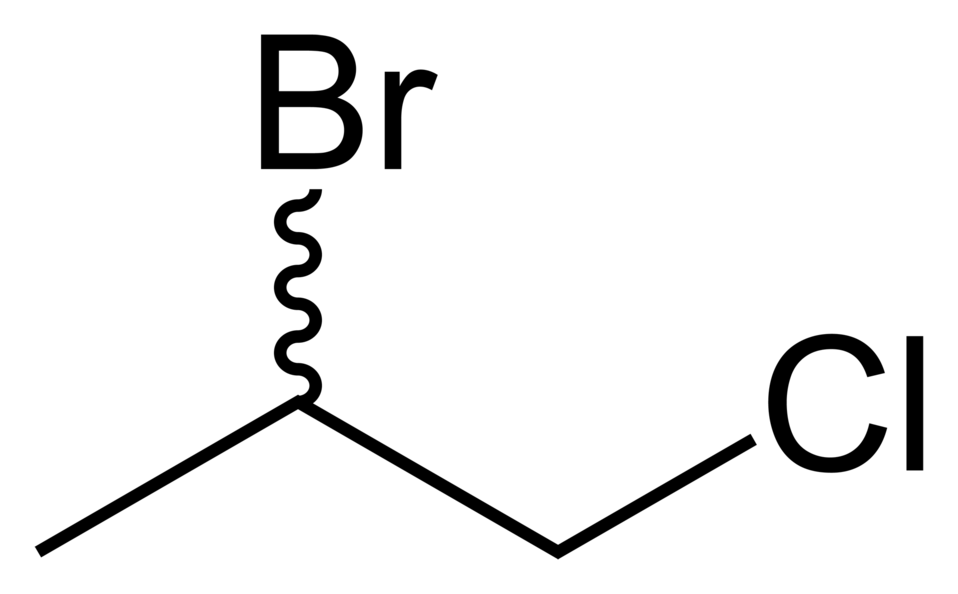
Skeletal formula of the 2-bromo-1-chloropropane molecule, C3H6BrCl. The absolute configuration at the stereogenic carbon atom (the 'asymmetric carbon') is deliberately unspecified or ambiguous, indicated by a wavy bond between C and Br. This kind of wavy bond can be used to mean a racemic mixture (equal amounts of each enantiomer present), or to mean a single enantiomer without specifying which one.